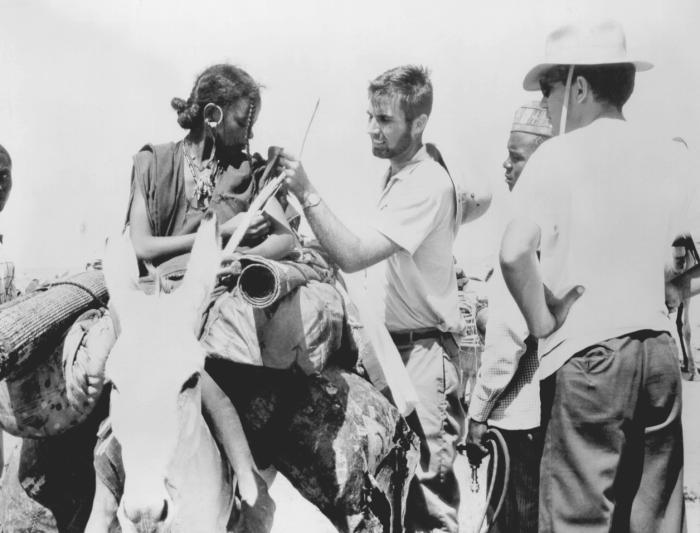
This woman is being vaccinated for smallpox during a 1968 African vaccination campaign.